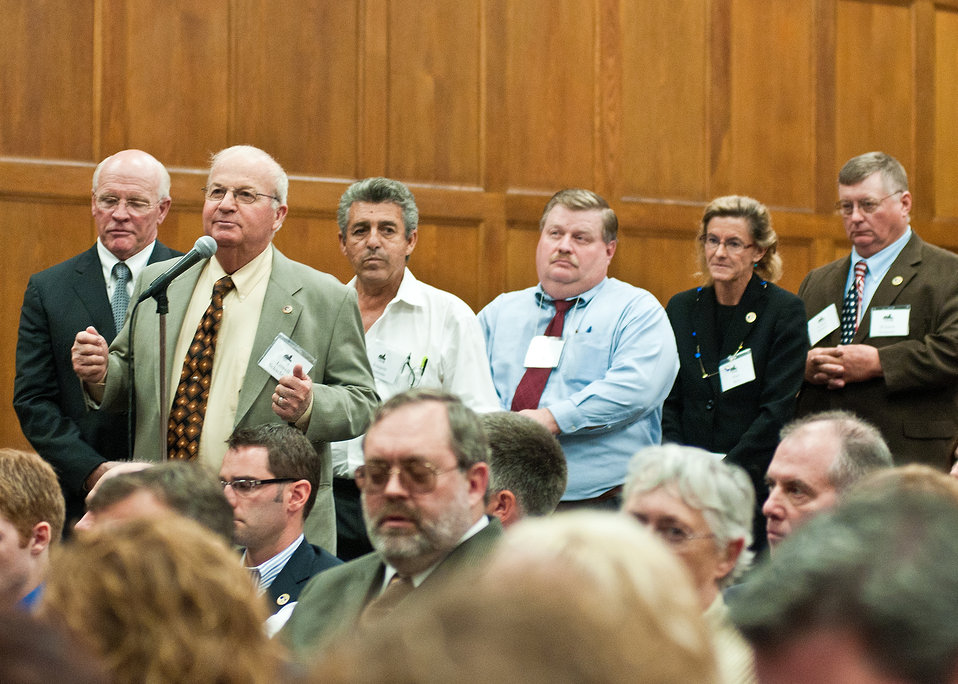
Lowell Schachtsier from Palmyra, MO and other members of the National Farmer’s Union posed questions to Agriculture Secretary Tom Vilsack at the U.S. Department of Agriculture during their annual Legislative Fly-In in Washington, D. C. on Monday, Sept. 12, 2011.